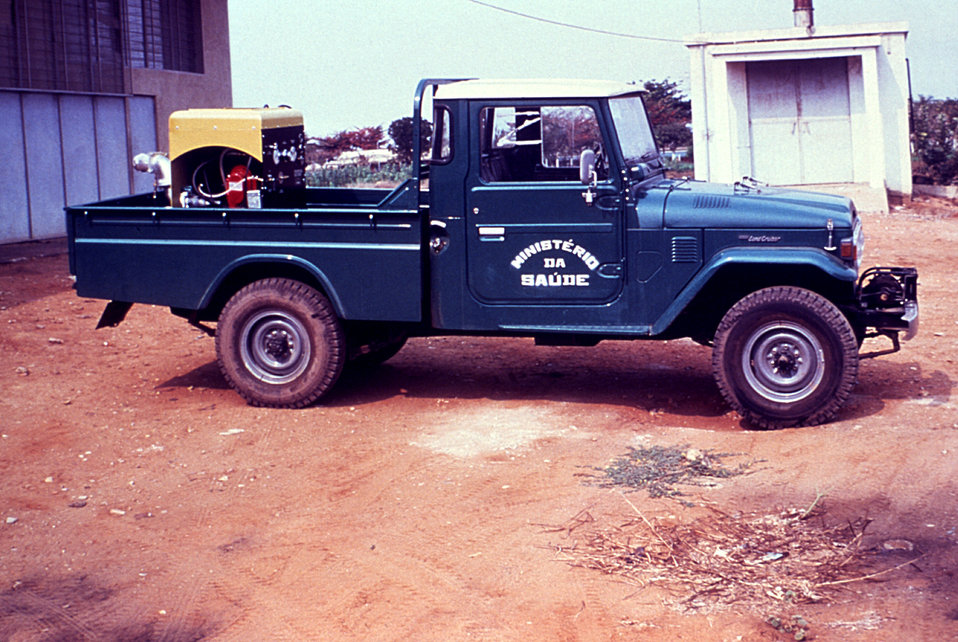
This 1981 photograph depicts a newer model Todd insecticidal fog applicator (TIFA) thermal fogger, used to deliver a high volume of fog to agricultural crops.